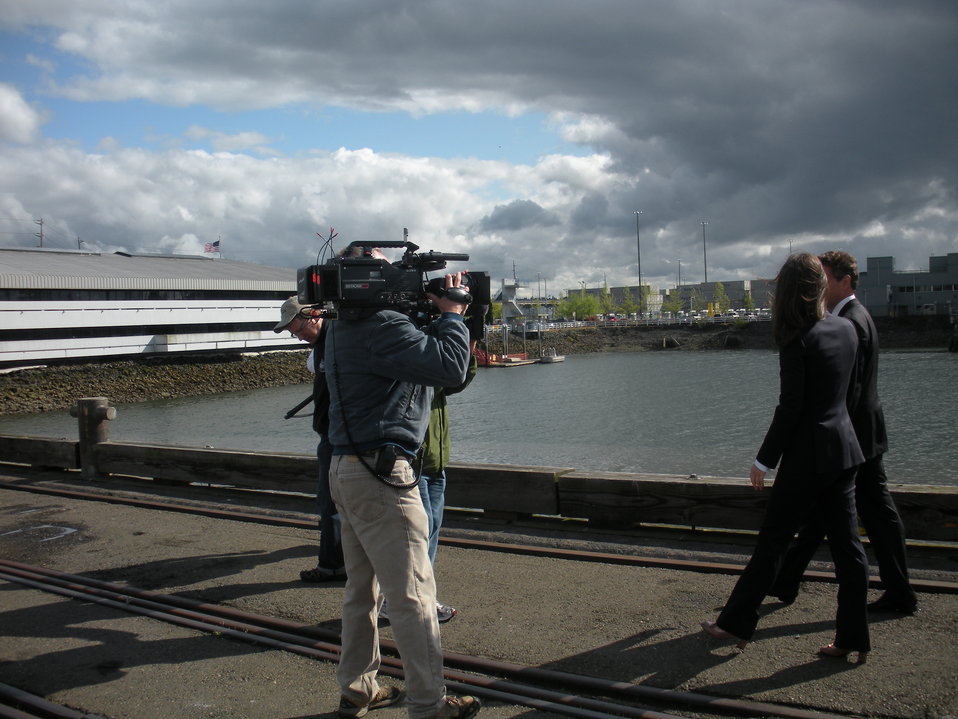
Tacoma, 5/18/2010

Erin Burnett interviews Secretary Geithner at the Port of Tacoma.